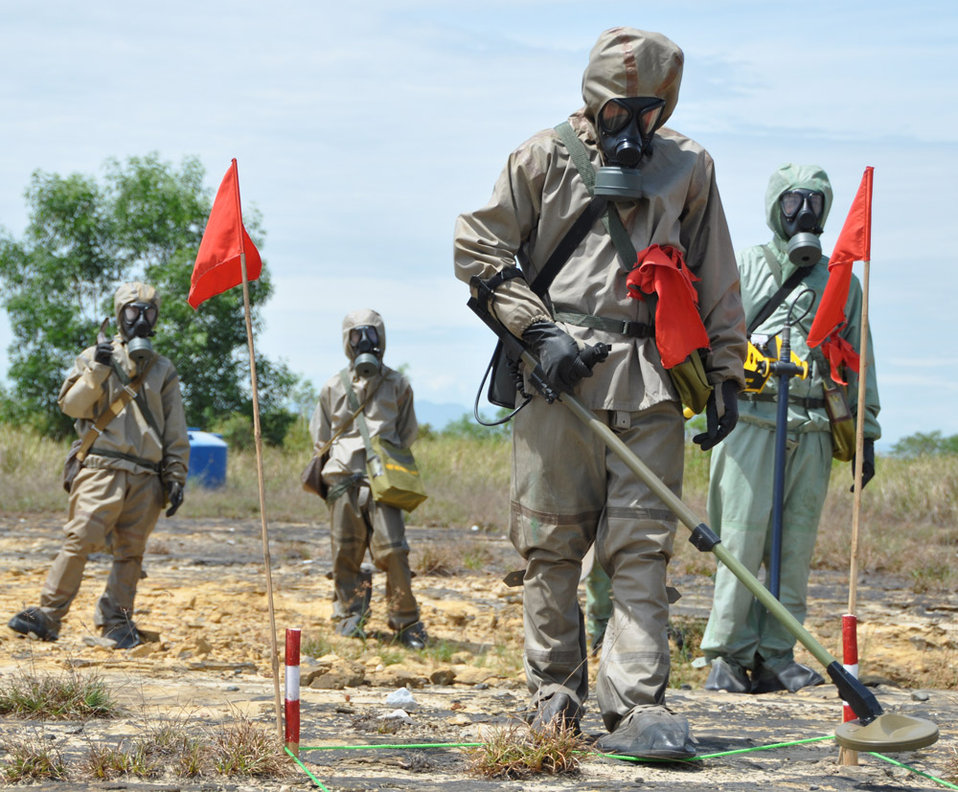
A Vietnamese soldier demonstrates UXO detection and clearance in Danang. June 17, 2011